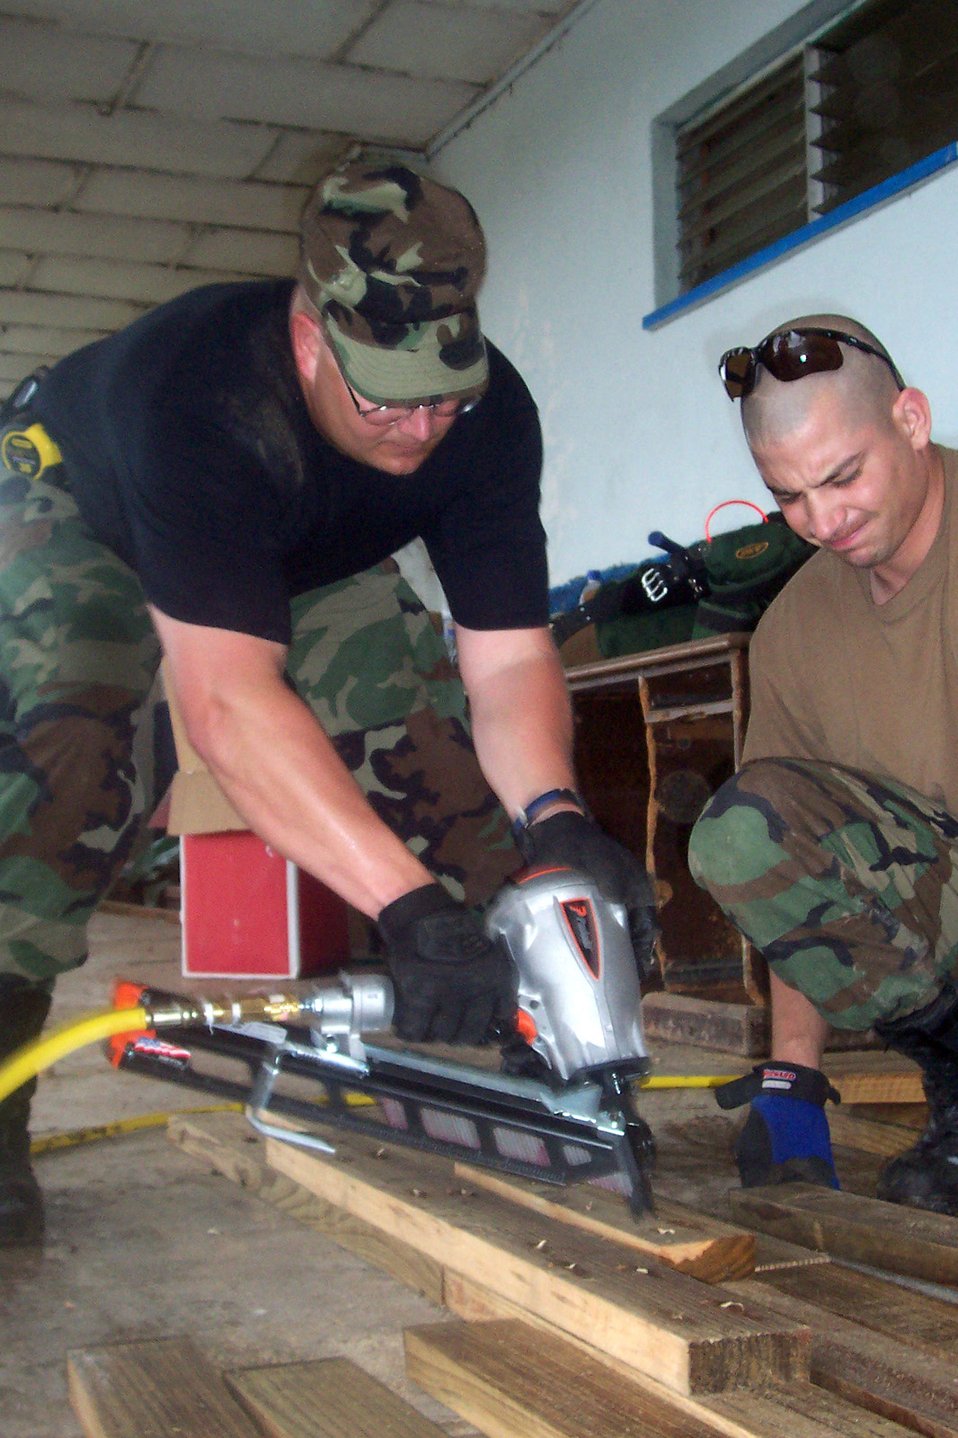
'Securing the future'

LA CEIBA, Honduras (AFPN) -- Tech. Sgt. Ivan Young and Staff Sgt. Robert Sheipline were among the first to help put together the tents that